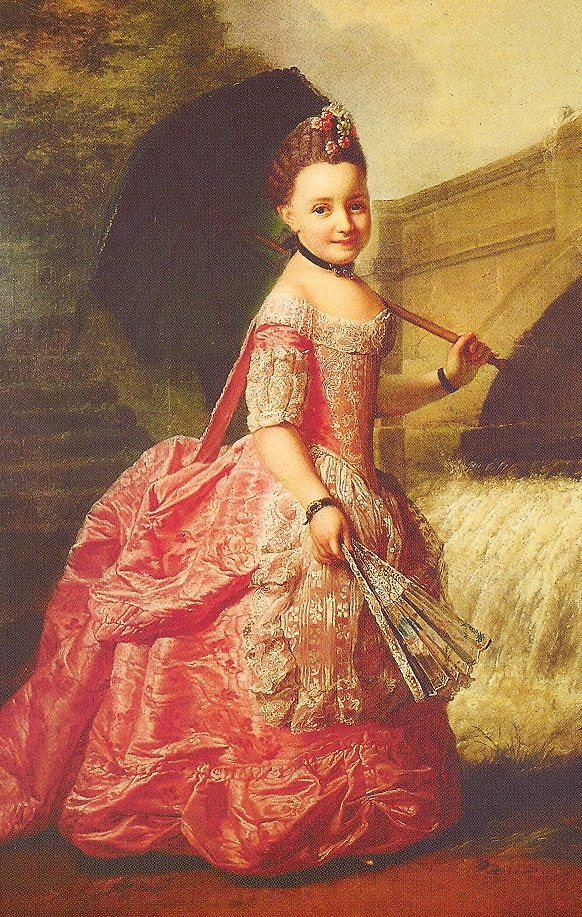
Sophia Frederica of Mecklenburg-Schwerin